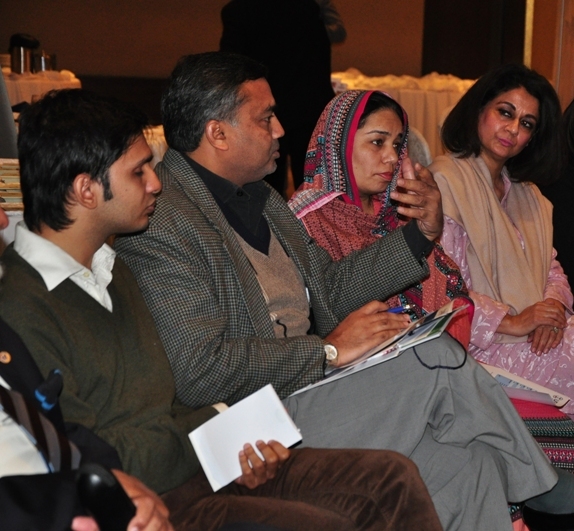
Group discussion.